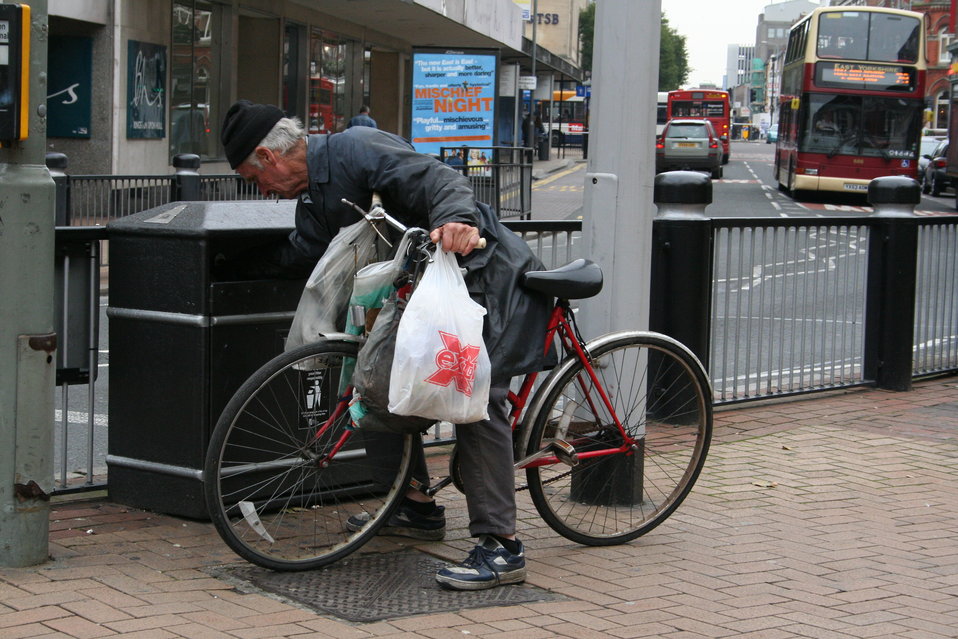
Een dakloze op zoek naar voedsel, in de Jameson Street in Hull (EN). De foto is door de uploader (Maurits Vink) gemaakt. Daar de gefotografeerde persoon niet in herkenbaar in beeld staat en ik de foto onder ht publieke domein heb gezet, mag de foto overal voor worden gebruikt. Ik zou wel graag een berichtje willen krijgen als de foto ergens anders dan voor Wikipedia wordt gebruikt, zuiver voor mijn interesse.